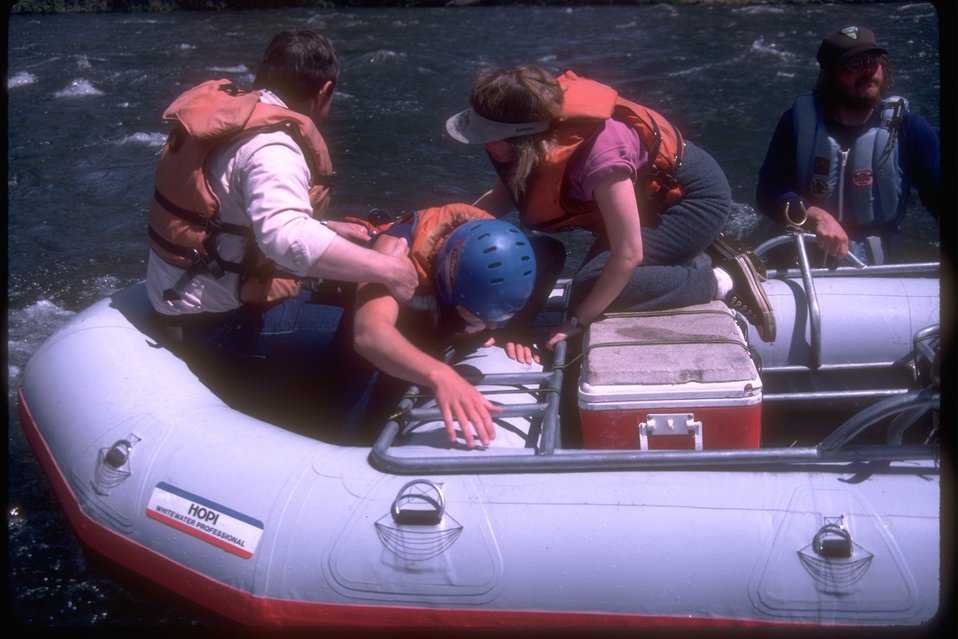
Rafting on the Grande Ronde River.